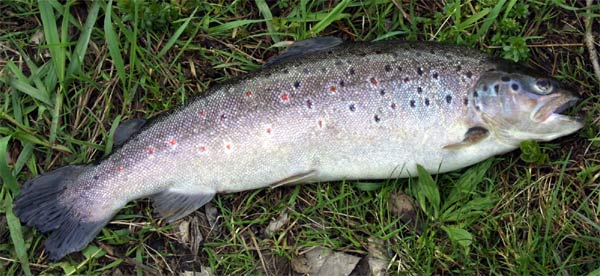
Deutsch: Beschreibung: Bachforelle 49cm 1,6kg gefangen in der Ybbs/Niederösterreich am 13.04.2001 Bachforelle - Salmo trutta fario, subspecies of Salmo trutta Українська: Атлантичний лосось, сьомга або озерний лосось.